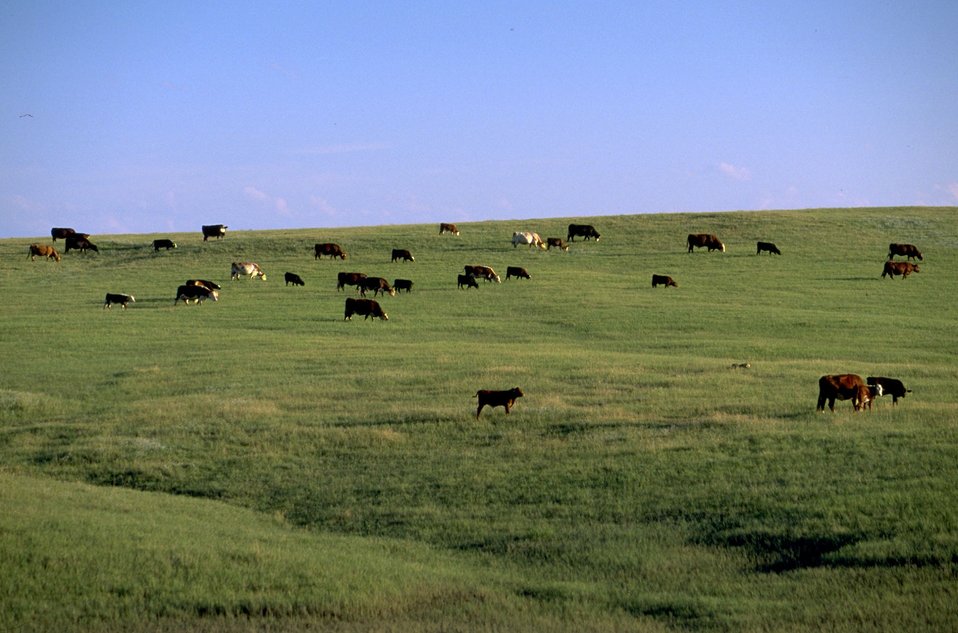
Cow/Calf Pairs grazing Public Lands in Lower Four Mile Unit